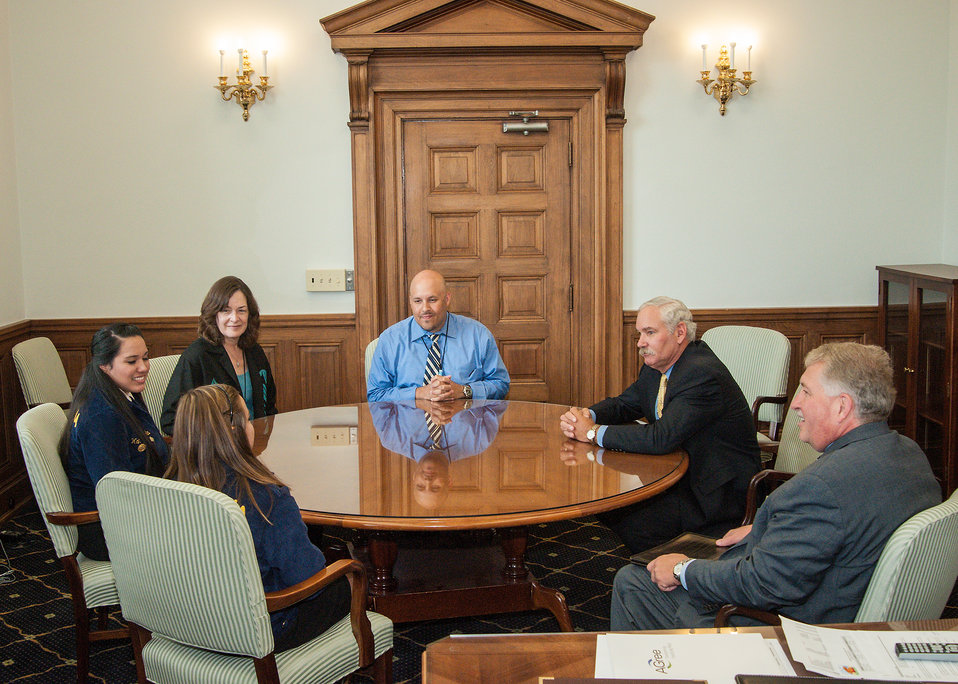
Tribal members meet with Agriculture Acting Deputy Secretary at the U.S. Department of Agriculture in Washington, D.C. on Thursday, Jul. 18, 2013. (R to L National FFA government and non-profit relations Director Kent Schescke, Agriculture Acting Deputy Secretary Michael Scuse, Office of Tribal Relations John Lowery, Office of Tribal Relations Director Leslie Wheelock, Louisiana Coushatta Tribe member Hannah Nichols, and Muscogee Creek member Jessica Wahnee).